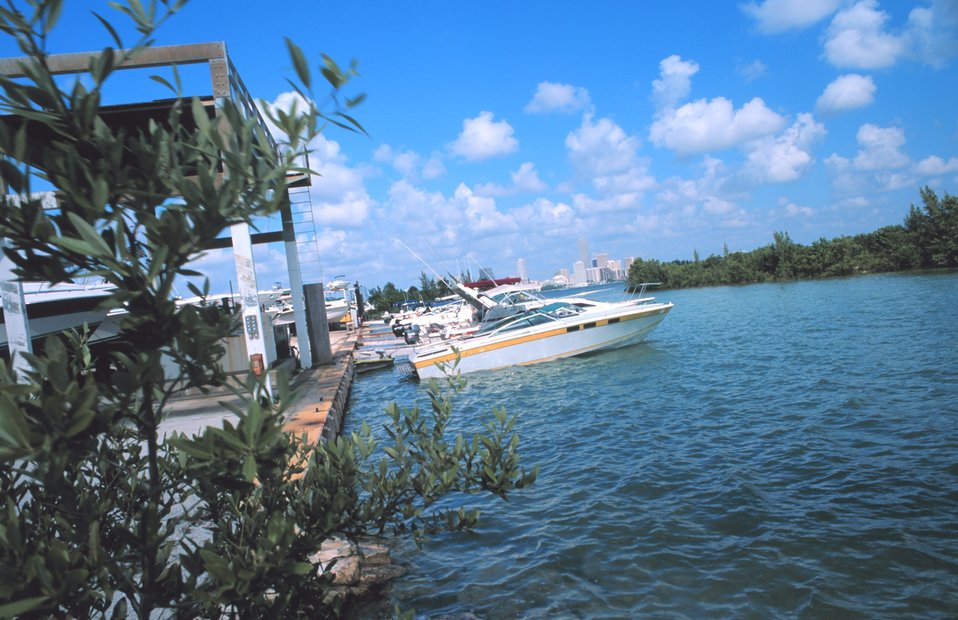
A view at Marine Stadium Marina